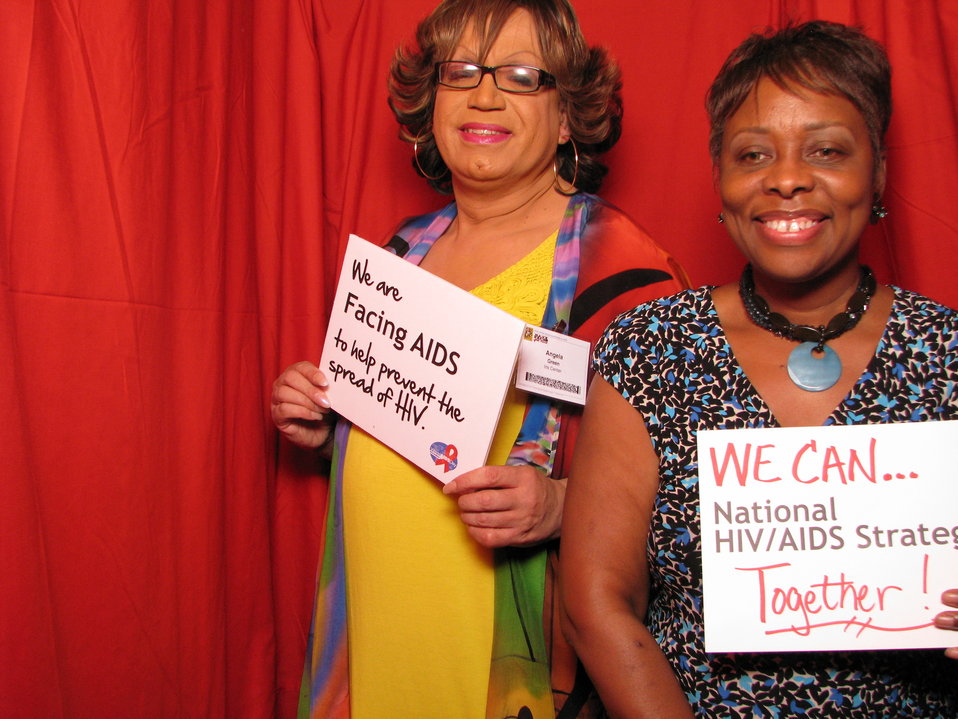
We are FACING AIDS to Help Prevent the Spread of HIV. WE CAN...National HIV/AIDS Strategy Together!

From the AIDS.gov photo booth at the U.S. Conference on AIDS, September 2010 (Orlando, FL).